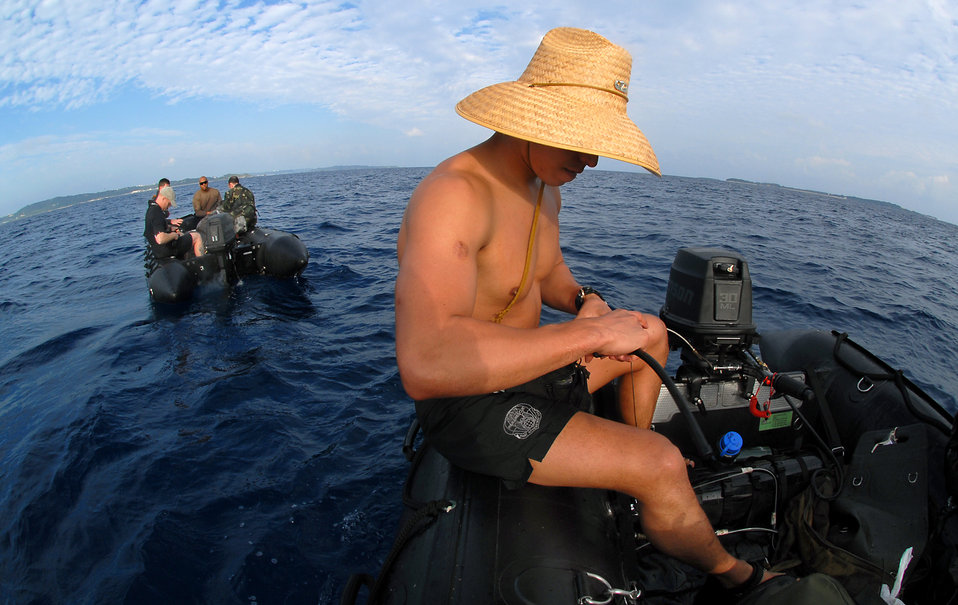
Combat Rescue

Senior Airman Jonathan Courtright, 31st Rescue Squadron, Kadena Air Base, Japan, gets ready to start the F470 Zodiac boat for a 3-mile boat ride back to the dock at the White Beach Naval facility after participating in a weekly training exercise Jan. 16.